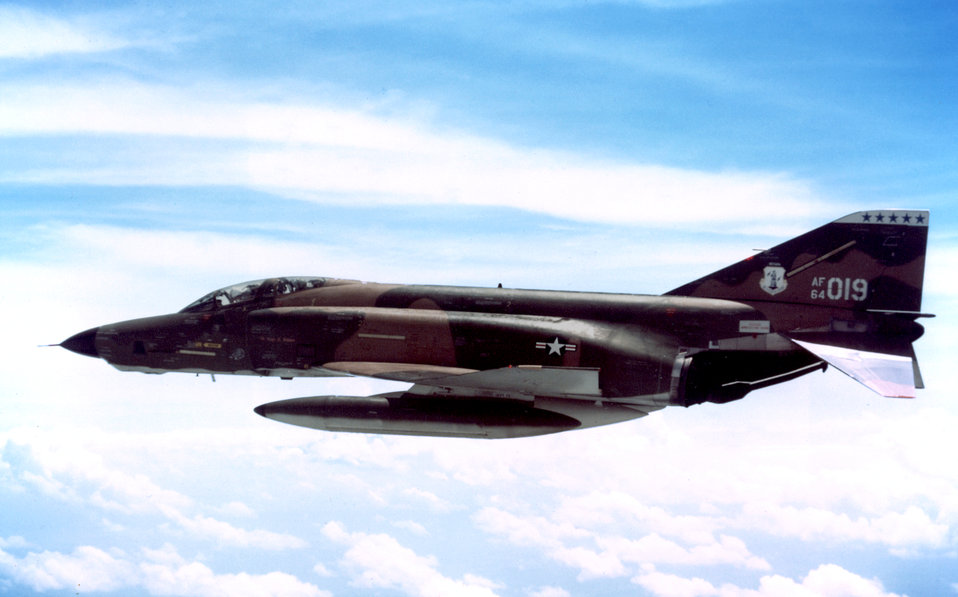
RF-4C Phantom II

1960s -- Left side view of an RF-4C Phantom II with auxiliary fuel tanks in flight August 1968. The aircraft was assigned to the 192nd Tactical Reconnaissance Group, Nevada Air National Guard.